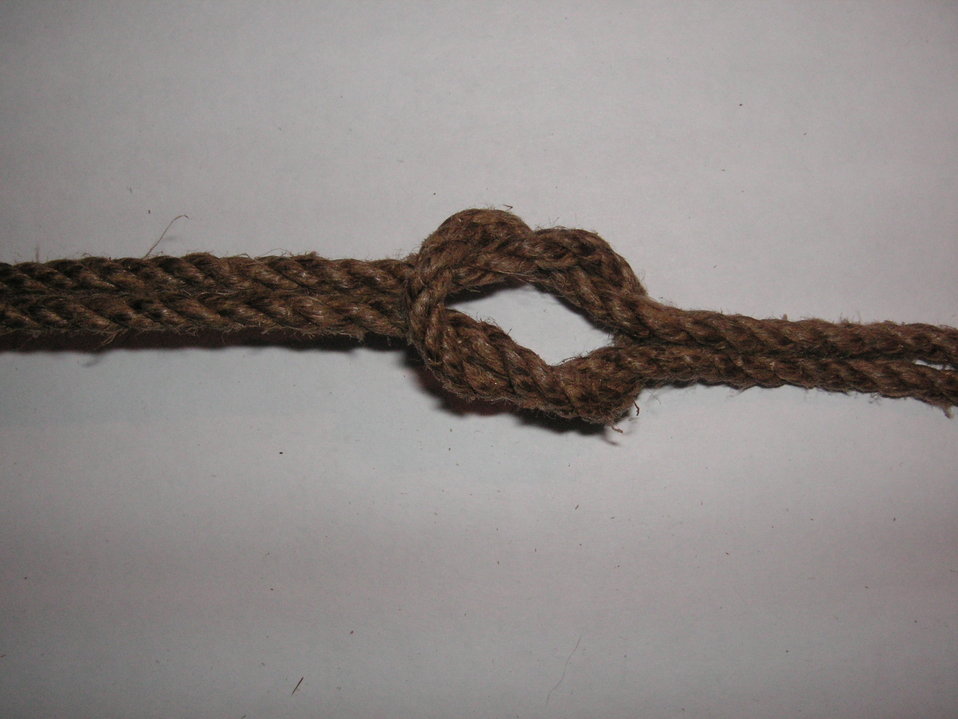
Public domain Public domain false false This work has been released into the public domain by its author, Sebbe.wigmo at the Swedish Wikipedia project. This applies worldwide.
In case this is not legally possible:
Sebbe.wigmo grants anyone the right to use this work for any purpose, without any conditions, unless such conditions are required by law.